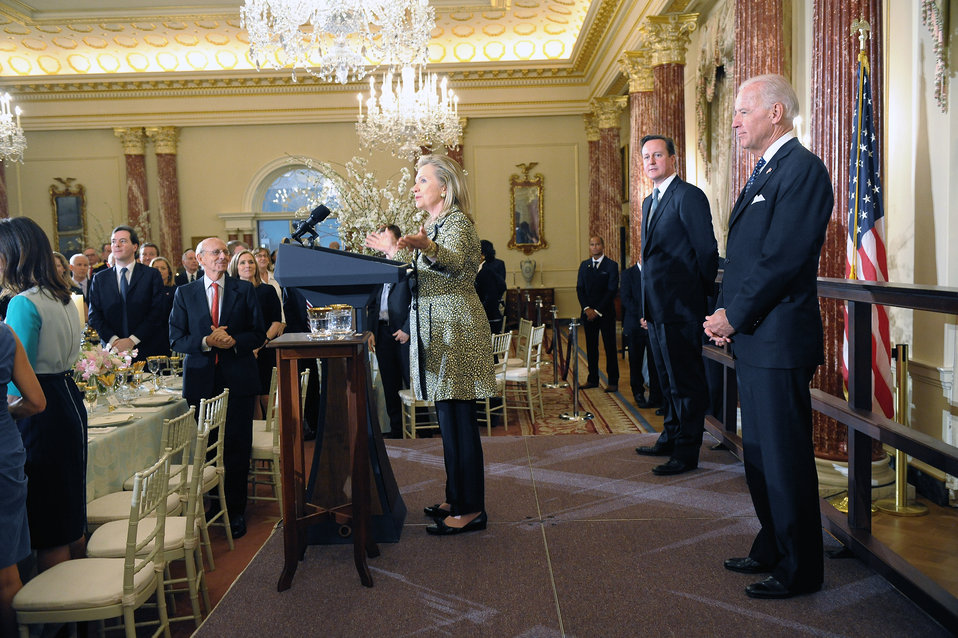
Secretary Clinton Discusses the U.S.-UK Relationship

U.S. Secretary of State Hillary Rodham Clinton discusses the U.S.-UK relationship at the luncheon in honor of UK Prime Minister David Cameron at the U.S. Department of State in Washington, D.C., on March 14, 2012. U.S. Vice President Joseph Biden is also pictured.